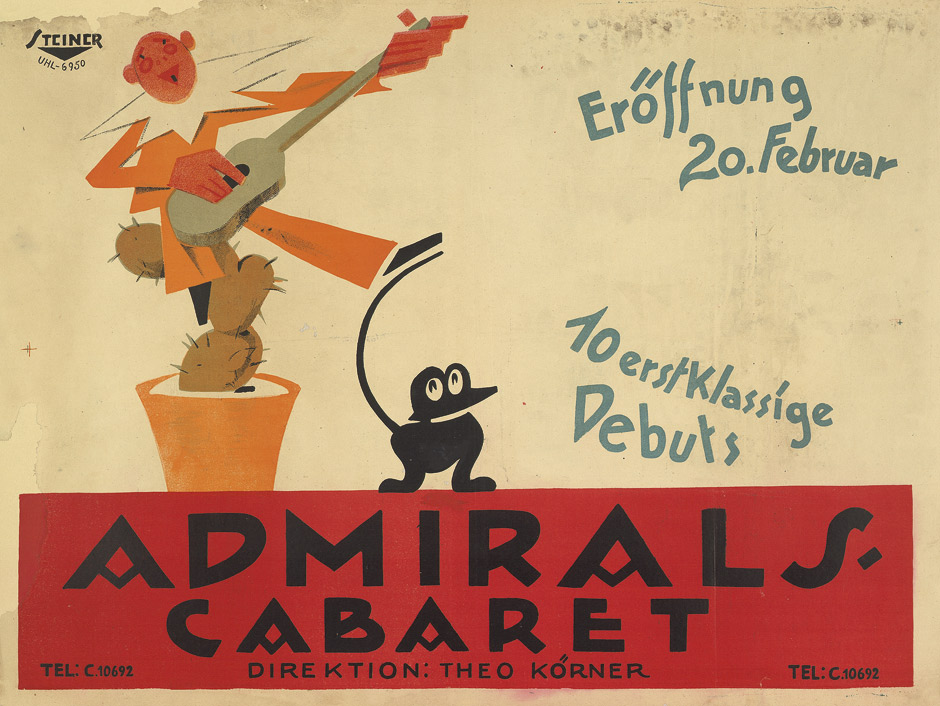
Admirals-Cabaret. Eröffnung 20. Februar. 10 erstklassige Debuts. Plakat/Poster. Farblithographie. 70 x 94 cm. Berlin, Vereinigte Kunstanstalten J. Bargou, um 1912.